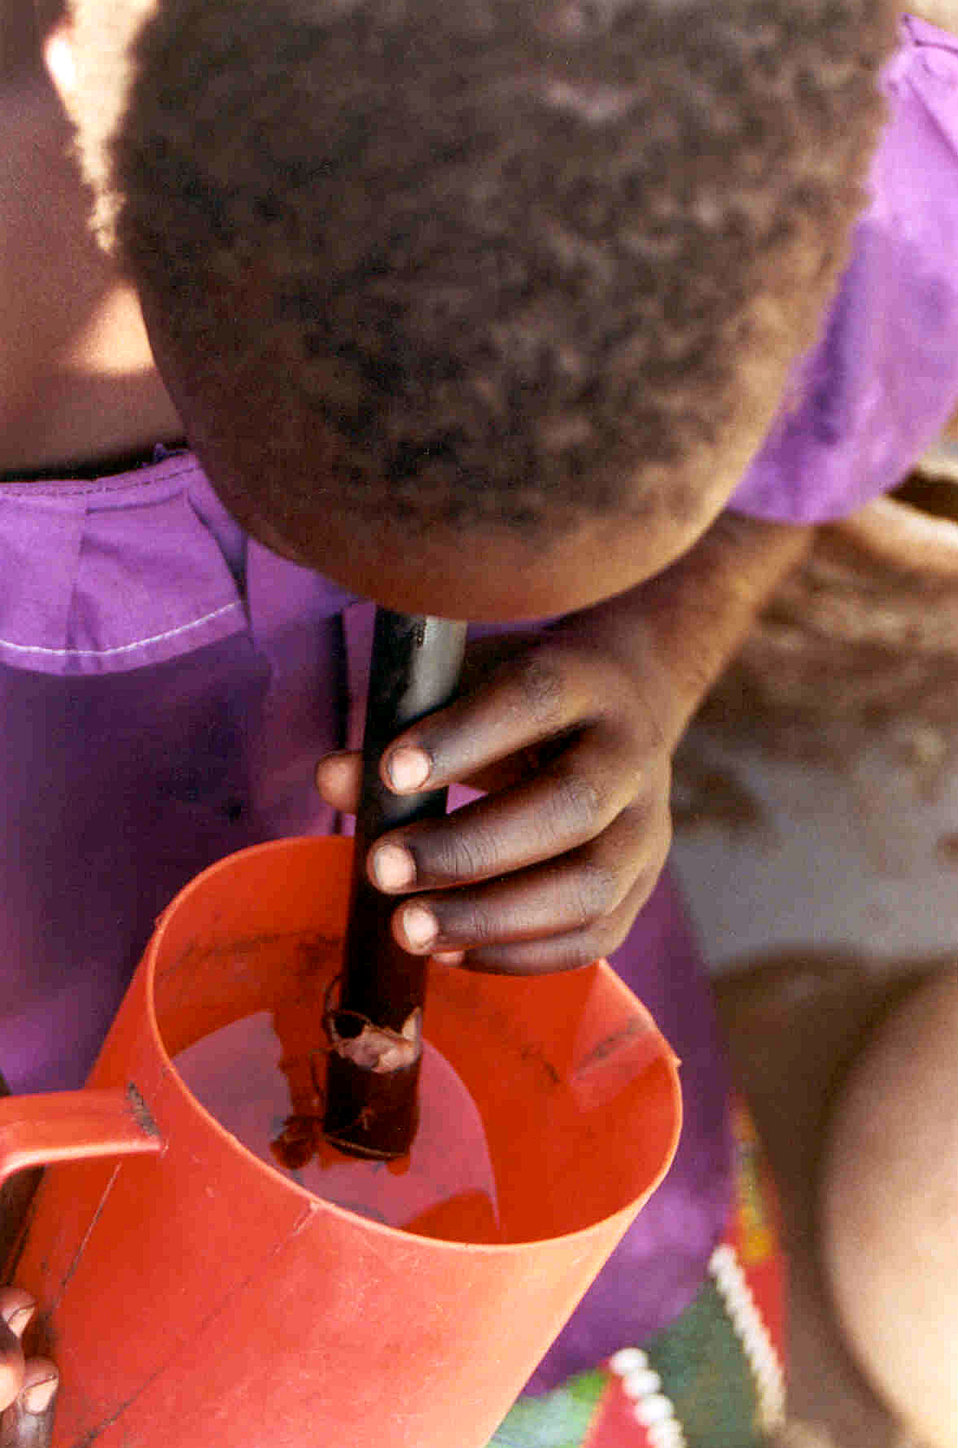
This 2002 image depicts a girl drinking water gathered from a local pond through a pipe filter. Similar to a straw, pipe filters are individual filtration devices, which allow people to filter their drinking water, in order to avoid contracting Guinea worm disease while traveling, or working in the field. To prevent possible infection, all drinking water must be filtered in endemic areas so as to remove the microscopic copepods, or 'water fleas' that carry the infective Guinea worm larvae.